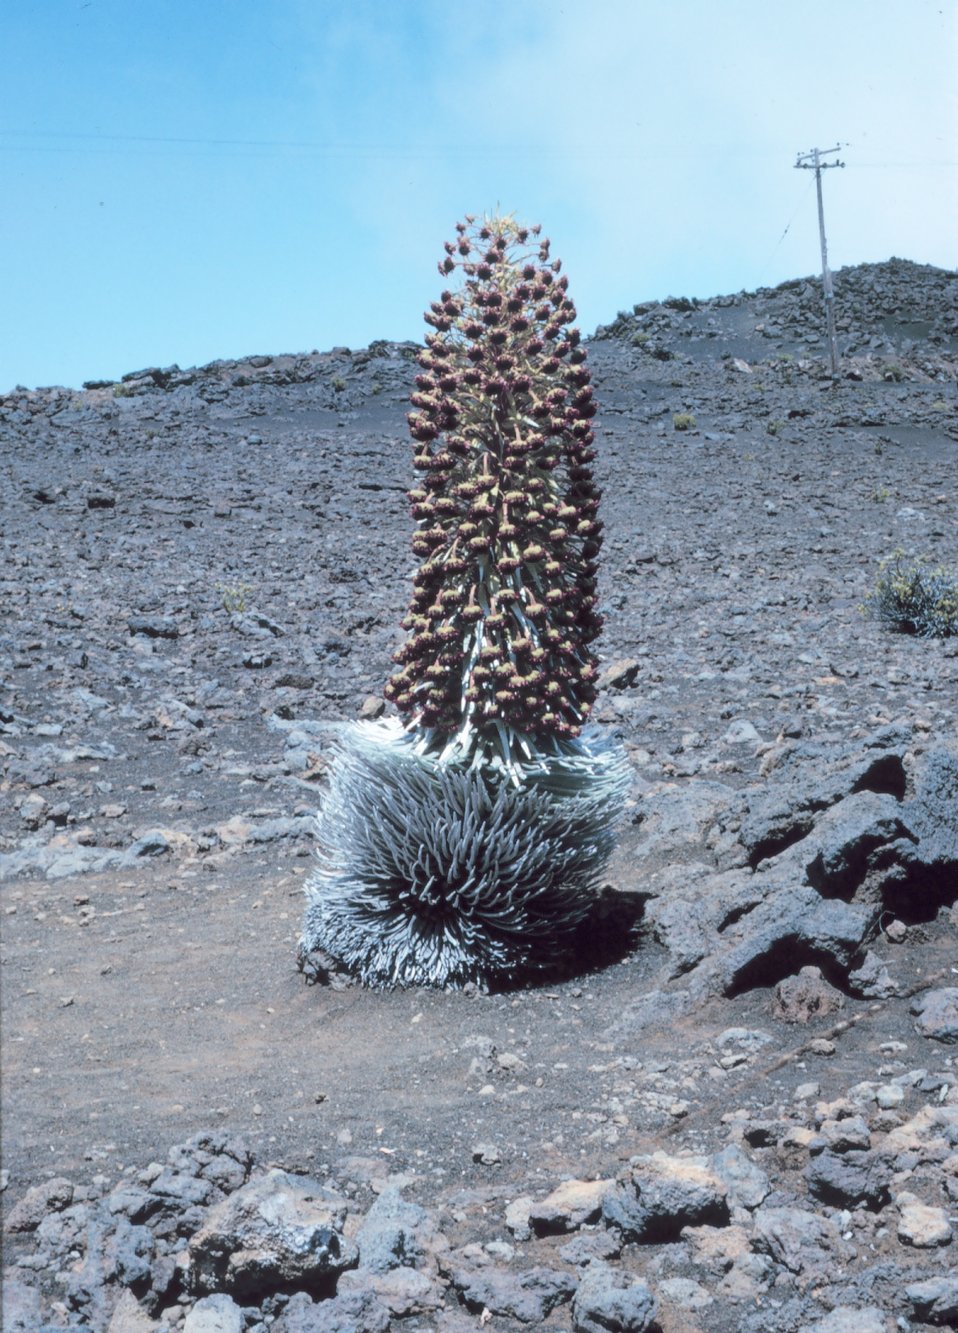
Silver sword growing on Mt. Haleakala